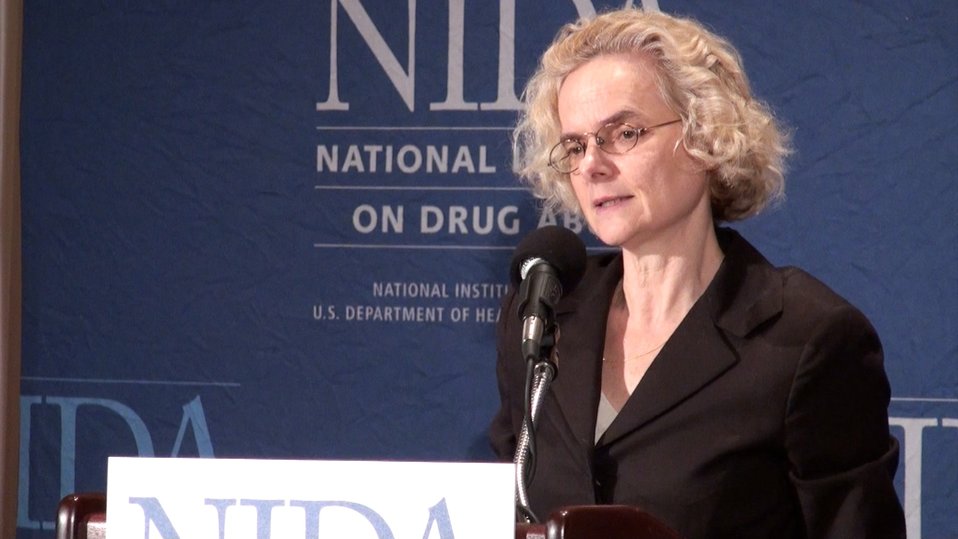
Dr. Nora Volkow, NIDA Director